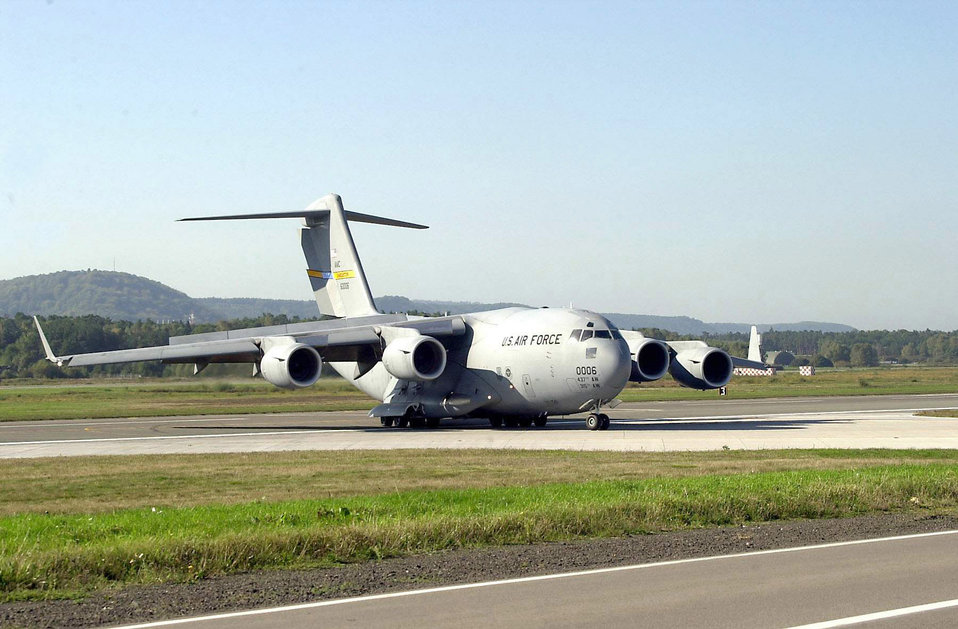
C-17 HDR drop

OPERATION ENDURING FREEDOM -- A C-17 Globemaster III taxis at Ramstein Air Base, Germany, Oct. 10, 2001 following a humanitarian mission lasting more thant 20 hours over the skies of Afghanistan. The plane airdropped humanitarian rations to refugees in support of Operation Enduring Freedom.